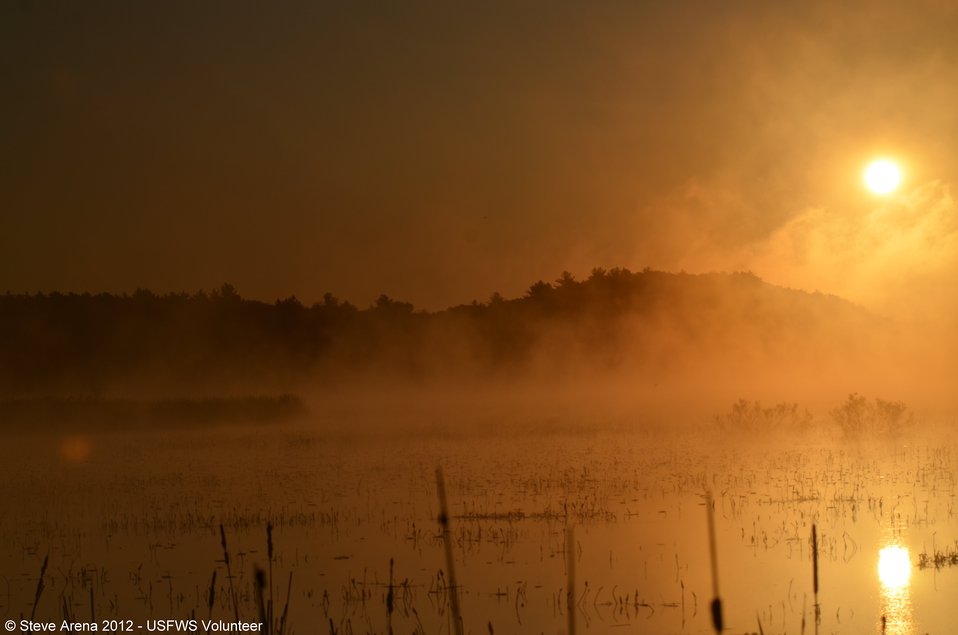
Sun Up at Great Meadows NWR, Concord, MA

Credit: Steve Arena/USFWS

18 May 2012